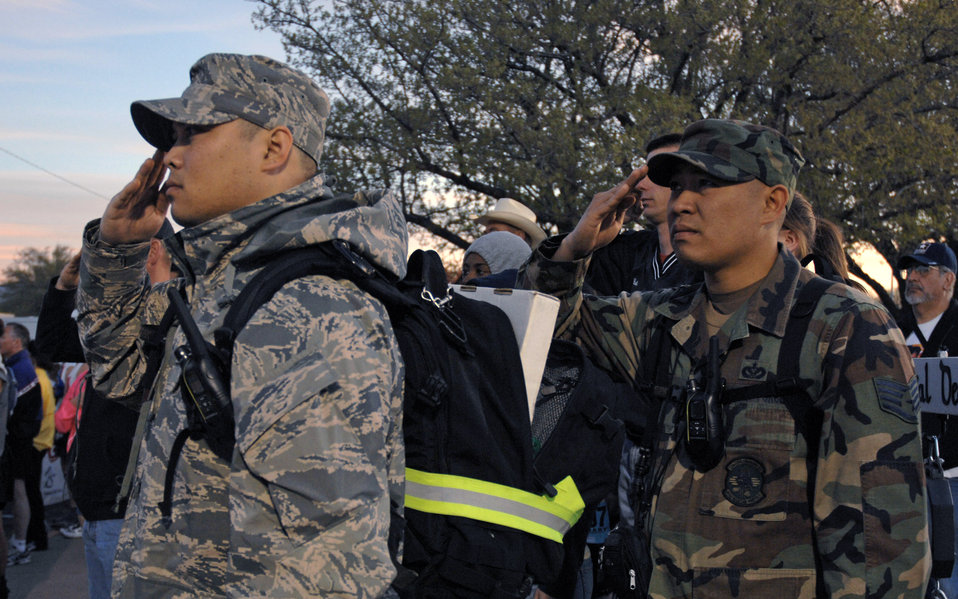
Cannon members march to honor Bataan POWs

Staff Sgts. Angelito Cooper (left) and Rhallete Javier salute the flag during opening ceremonies of the 19th Annual Bataan Memorial Death March March 30 at White Sands Missile Range, N.M. More than 4,400 runners and marchers participated in the 26.2 or 15-mile run/walk on March 30. Sergeant Cooper is assigned to the 27th Special Operations Logistics Readiness Squadron, and Sergeant Javier is from the 27th Special Operations Civil Engineer Squadron, both from Cannon Air Force Base, N.M.